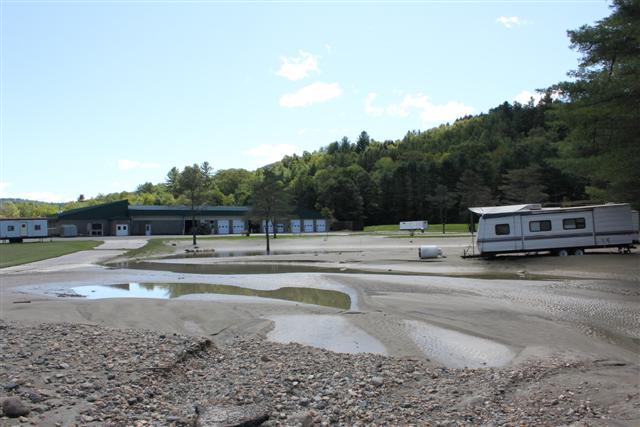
White River National Fish Hatchery after Irene

Damage and flooding at the White River National Fish Hatchery in Bethel, VT. after Hurricane Irene came through on Sunday, August 28, 2011.